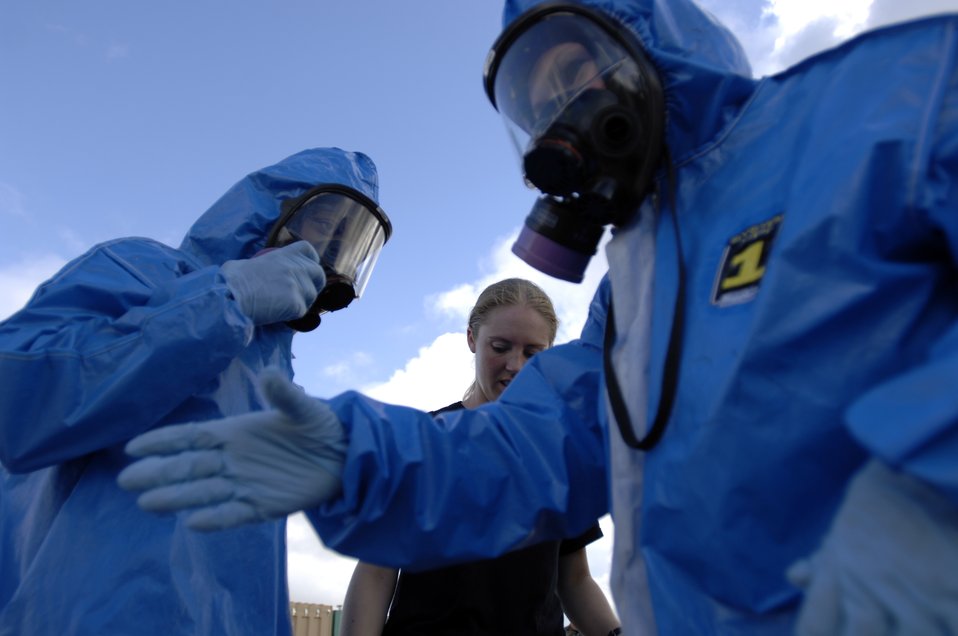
Airmen compete in training challenge

Tech. Sgt. Melanie Berry and Capt. Isaiah Manigault prepare to inspect a simulated ambulance crash scenario at the Chemical Biological Radiological Nuclear Challenge at Brooks City-Base, San Antonio, Sept. 15. The Airmen are participants from Air Mobility Command.